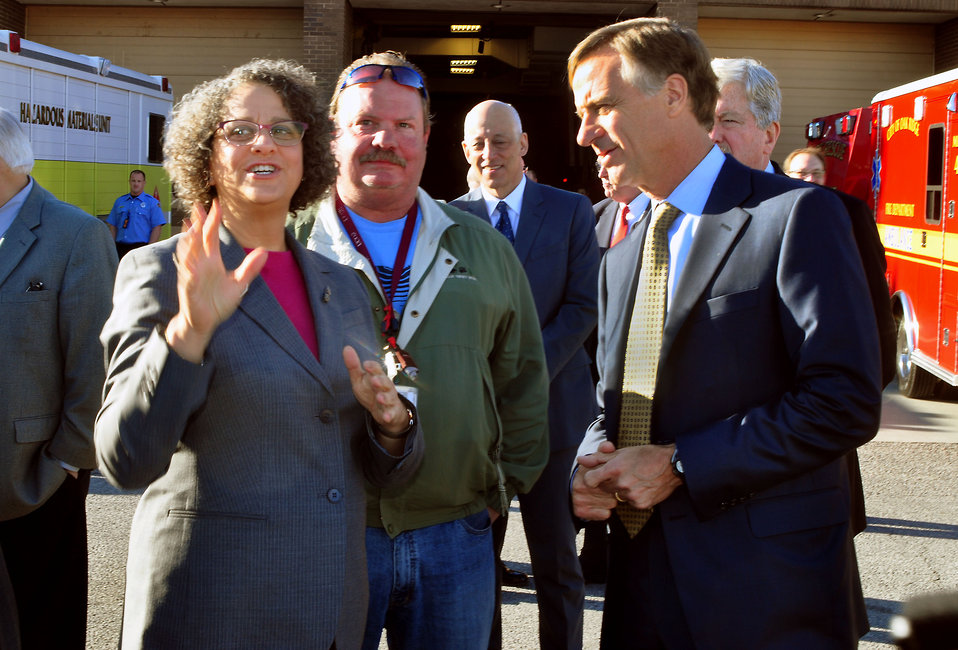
Gov. Bill Haslam Visit to ETTP 2014 Oak Ridge

14-037 DOE photo Lynn Freeny 3-21-2014 Oak Ridge Tennessee